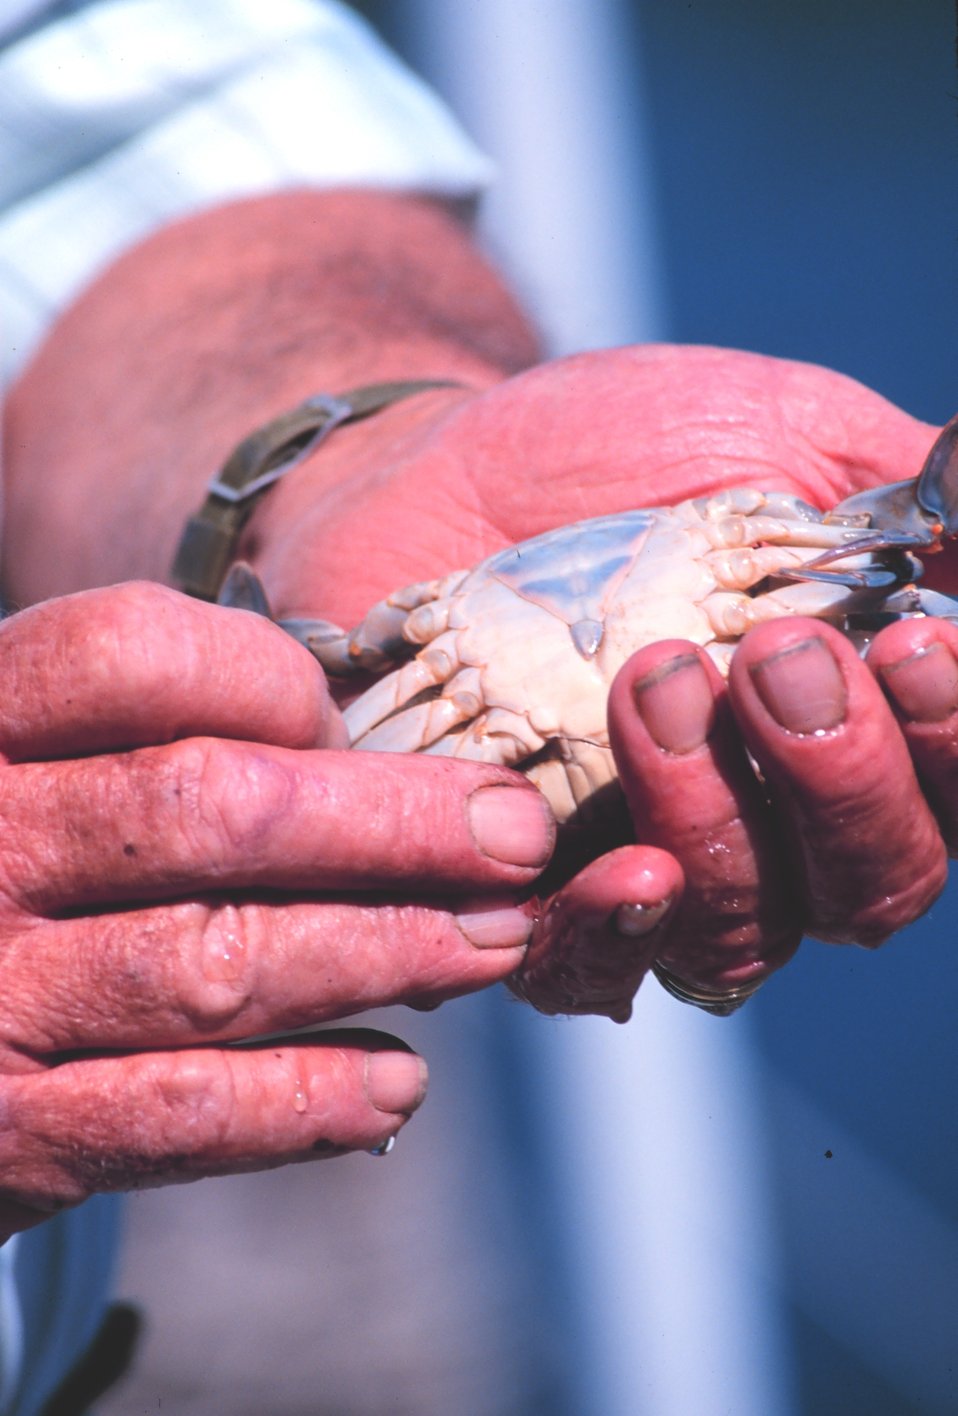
Holding a soft-shell 'peeler' crab (female)